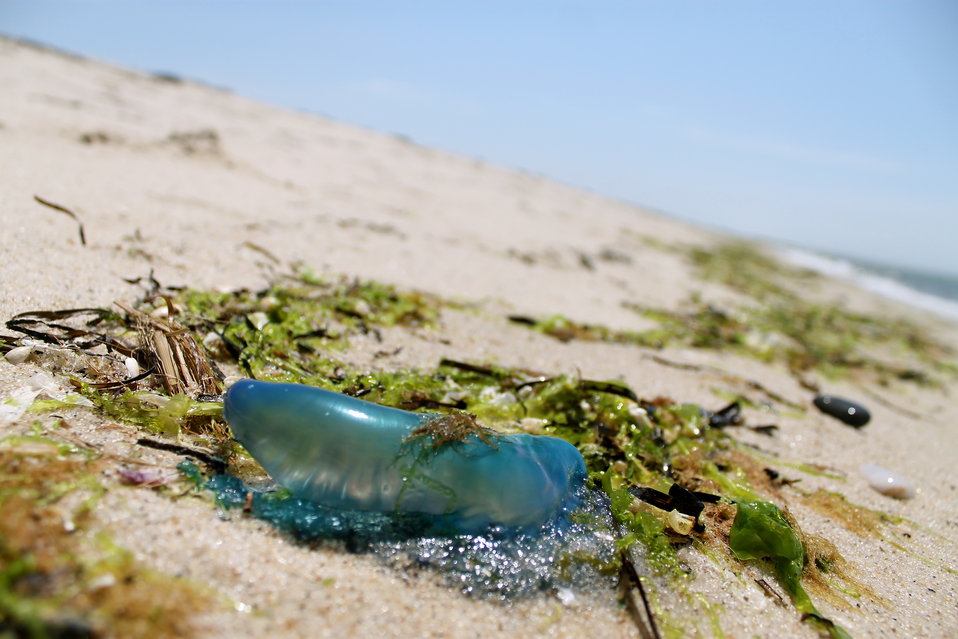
Portuguese man o'war

Monomoy National Wildlife Refuge, MA.